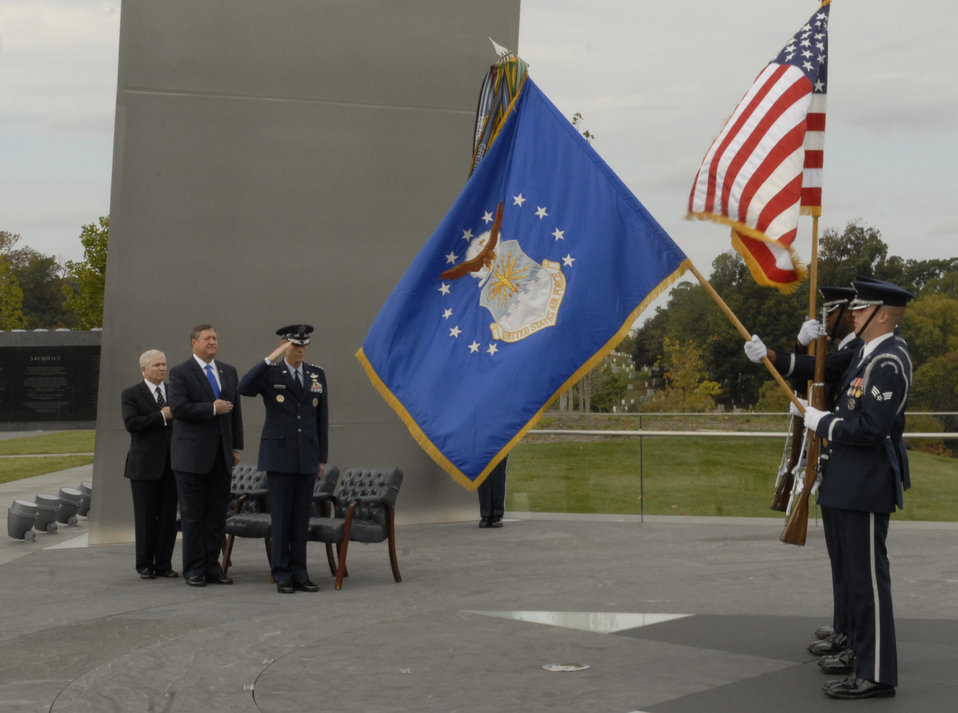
Donley officially sworn in as Secretary of the Air Force

Secretary of Defense Robert Gates (from left), Secretary of the Air Force Michael Donley and Chief of Staff of the Air Force Gen. Norton Schwartz salute the flag as the Air Force band plays the national anthem at the swearing in ceremony for Secretary Donley. He was sworn in as the 22nd secretary of the Air Force Oct. 17 at the Air Force Memorial in Arlington, Va.